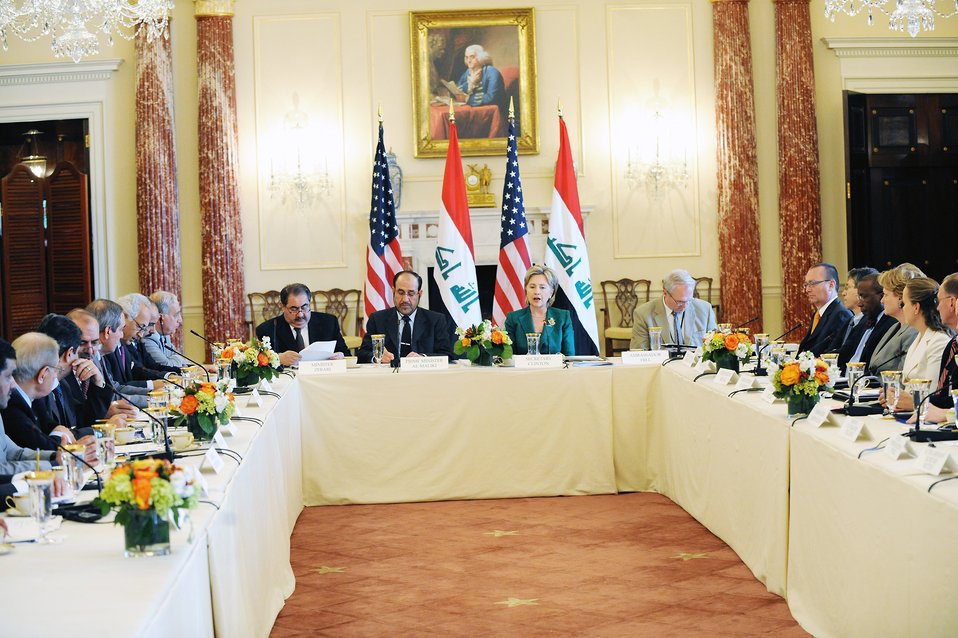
U.S.-Iraq High Coordinating Committee Meeting

U.S. Secretary of State Hillary Rodham Clinton holds U.S.-Iraq High Coordinating Committee Meeting with His Excellency Nouri al-Maliki, Prime Minister of the Republic of Iraq at the U.S. Department of State in Washington, DC July 24, 2009.